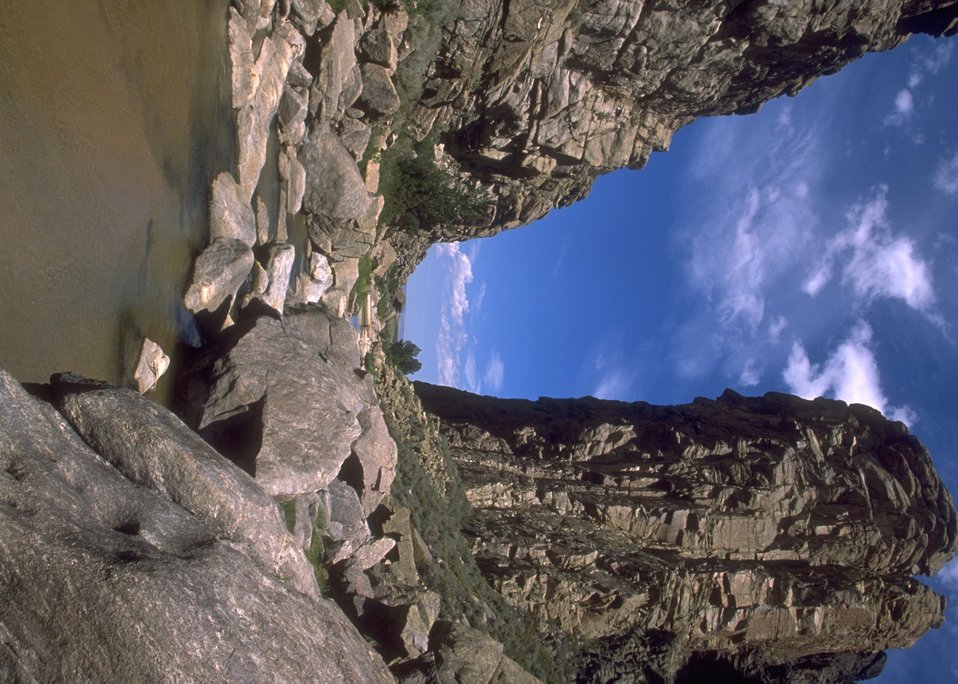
Devil's Gate historic site, Rawlins Field Office.